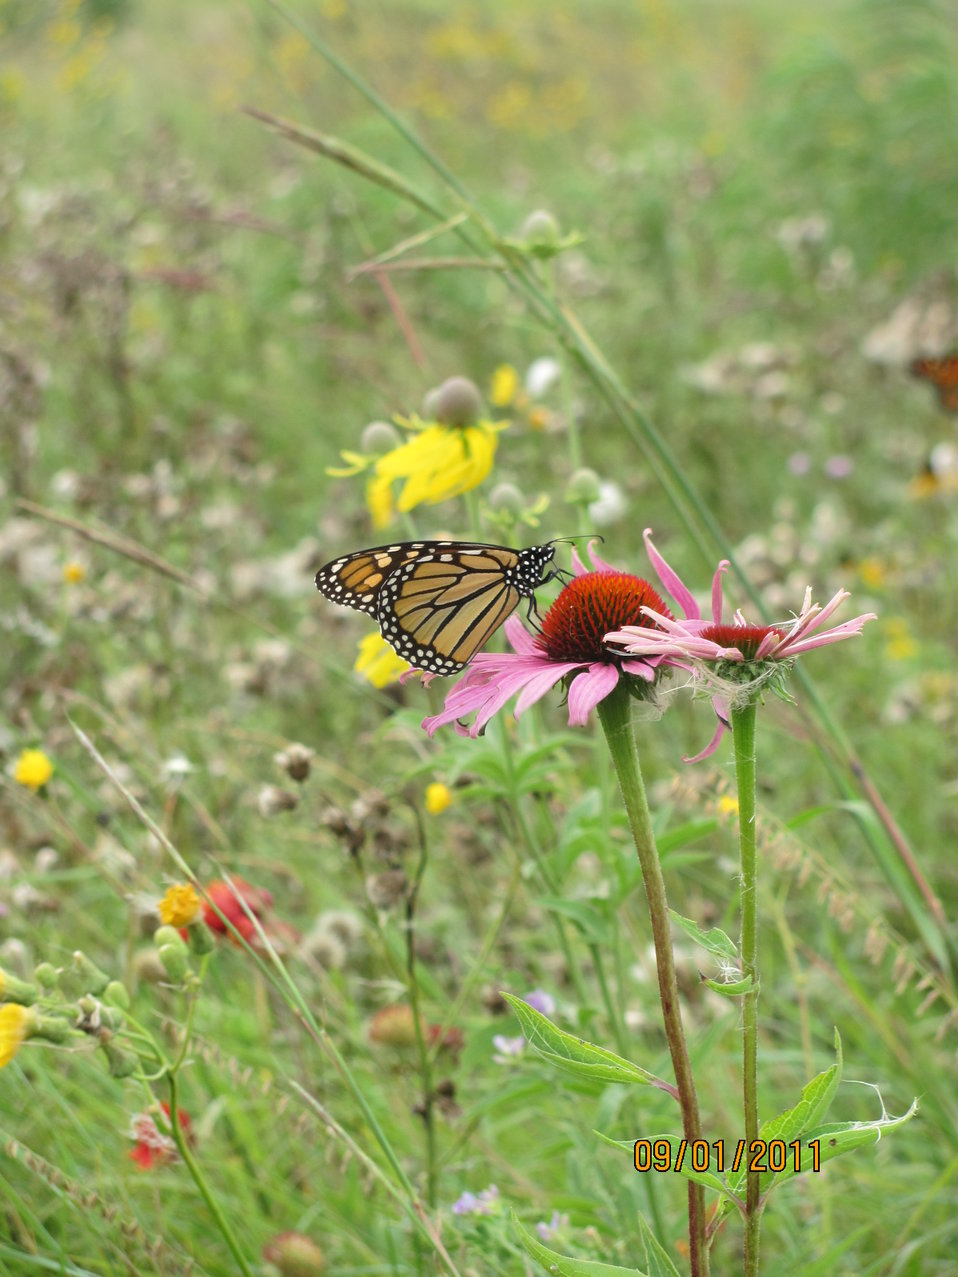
Monarch Butterfly (Danaus plexippus)

This Monarch butterfly (Danaus plexippus) was found resting on top a Purple Coneflower (Echinacea angusifolia) along the auto tour trail at the Chase Lake National Wildlife Refuge Headquarters in Noth Dakota.